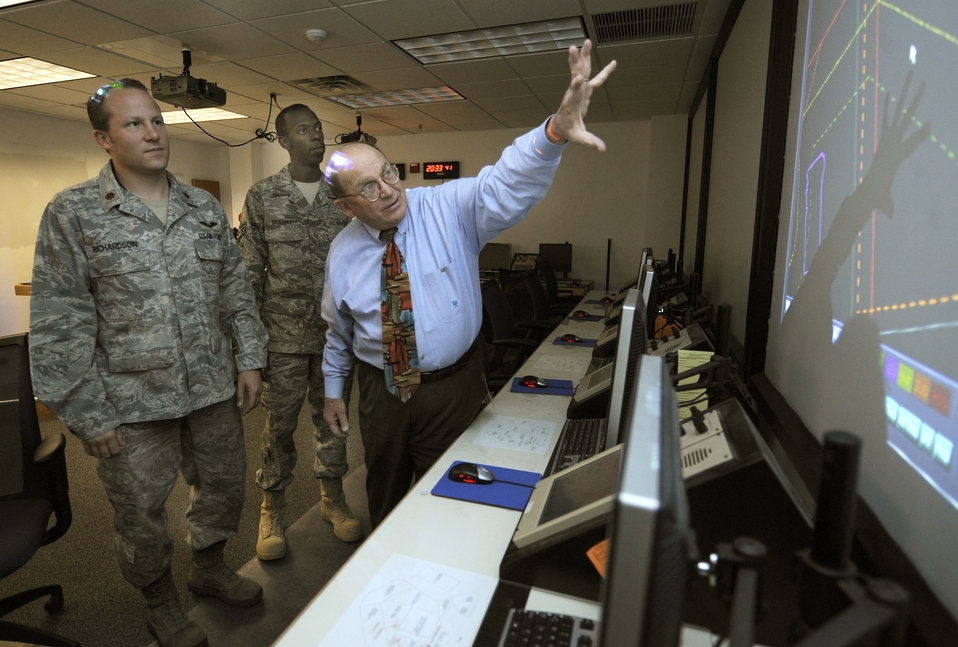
Cowboys assist BLM

Maj. Blake Richardson, Staff Sgt. Derek Sidberry and Jack Peterson discuss the airspace restrictions for the wild horse emergency gather Sept. 1, 2010. Due to wildfires near Saylor Creek Range, approximately 300,000 acres of range was burned, denying 198 wild horses access to food. Major Richardson is the 266th Range Control Squadron mission crew director. Sergeant Sidberry is a 266th Range Control Squadron mission crew technician. Mr. Peterson is a BLM senior military advisor.